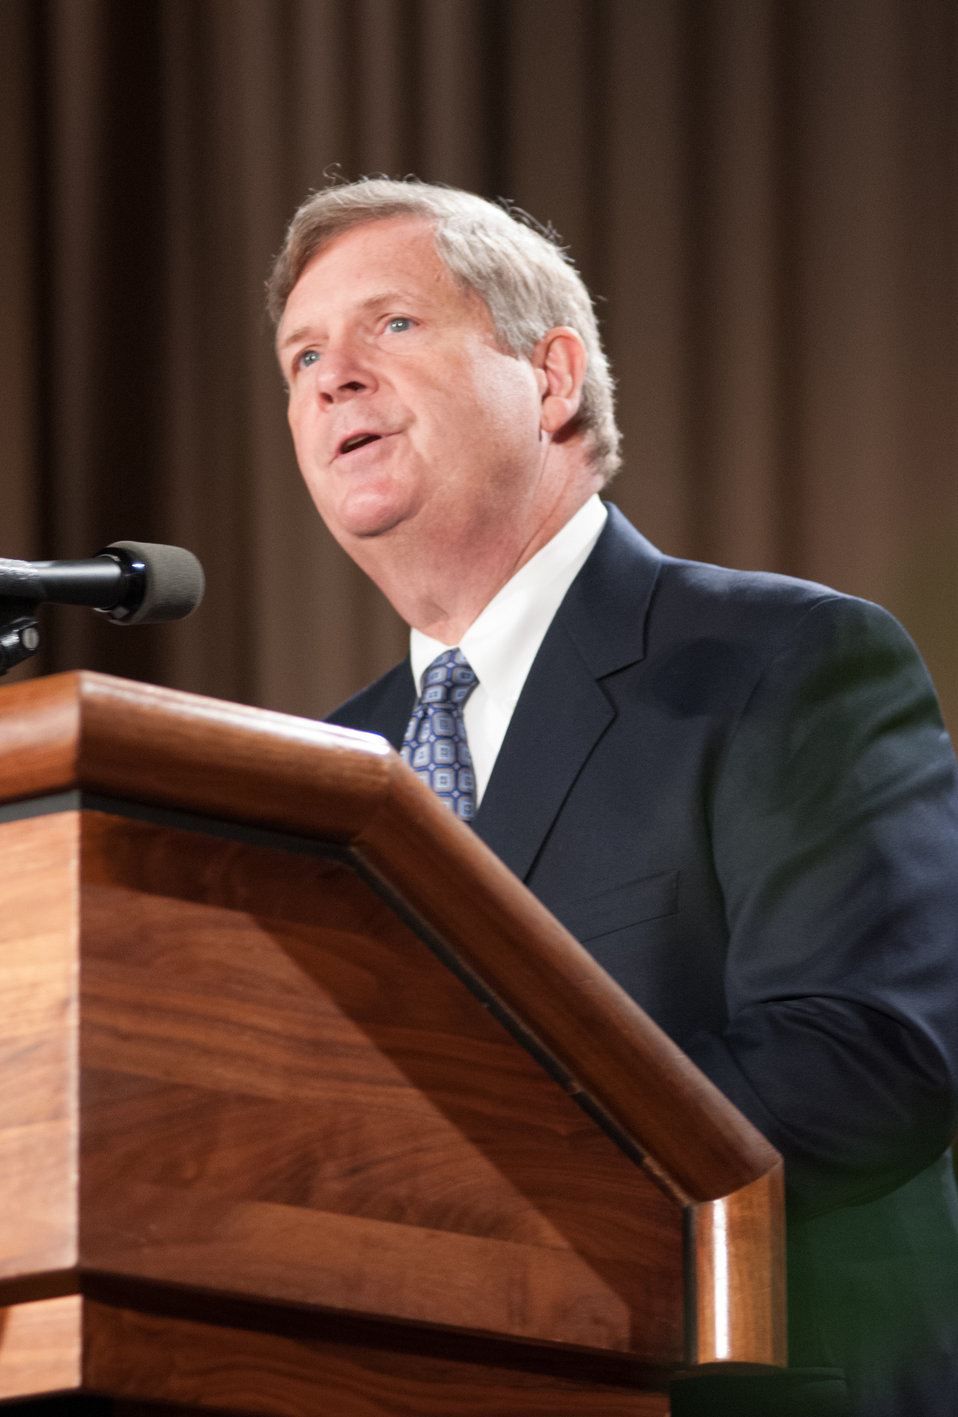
Agriculture Secretary Tom Vilsack welcomes First Lady Michelle Obama to the U.S. Department of Agriculture (USDA) in Washington, D.C. on Friday, May 3, 2013. Mrs. Obama visited USDA to thank employees for their service and dedication. The First Lady reminded federal workers of the importance of the work they do to support American farmers and ranchers, protecting the environment, lifting up rural communities, and keeping food safe, and working to end hunger.